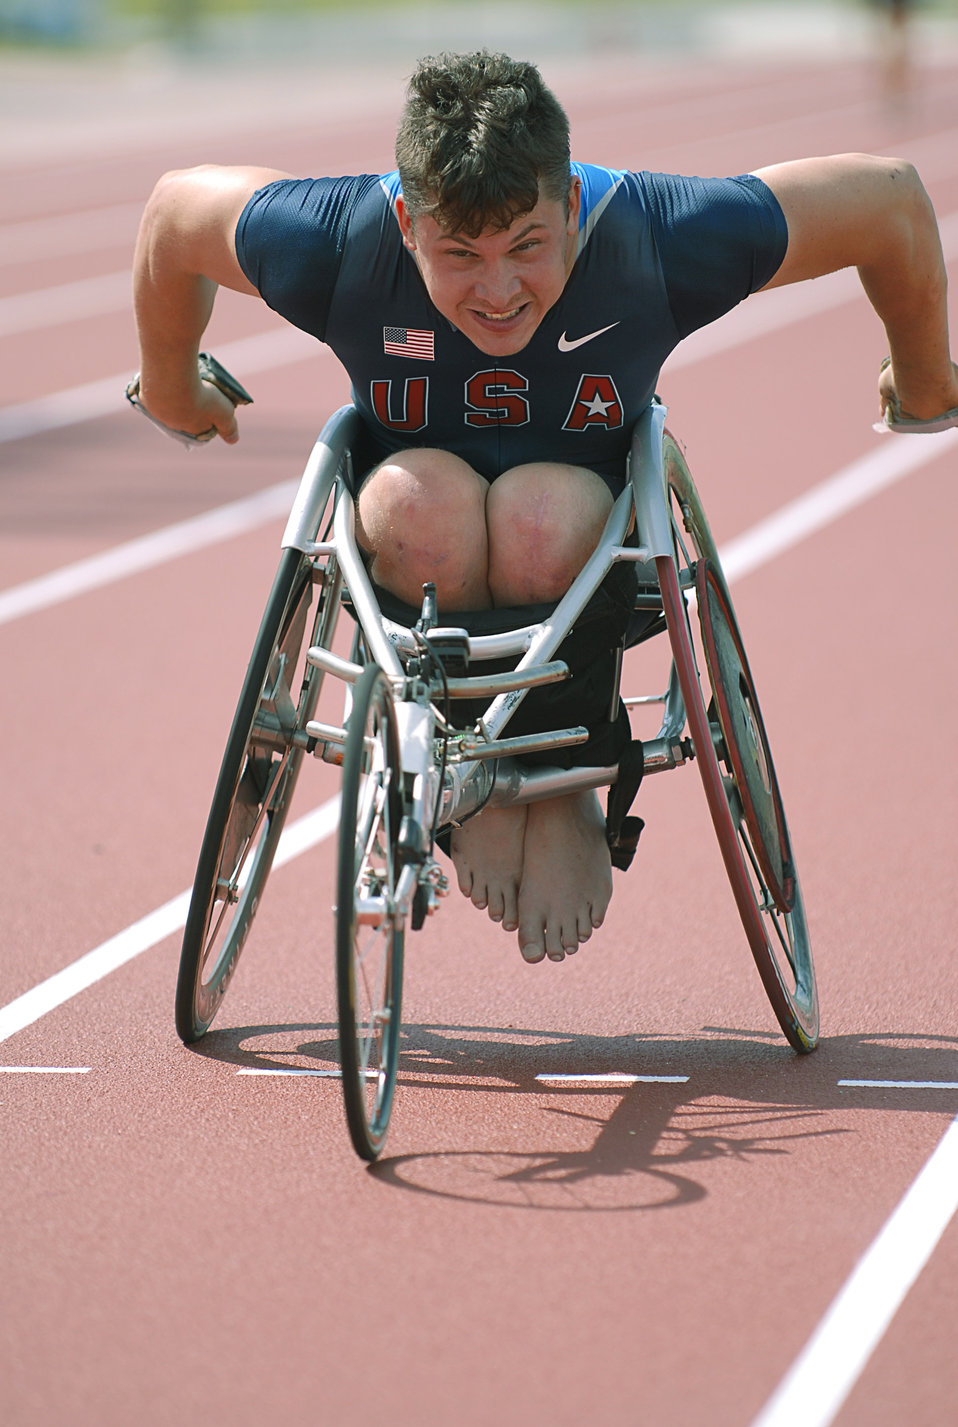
Paralympic athletes train at Kadena

Wheelchair racer Josh Roberts of Morris, Ala., trains for sprint races Aug. 26 at Ryukyu Middle School on Kadena Air Base, Japan. More than 100 athletes and support staff from the U.S. Paralympics track and field and swim teams arrived on Kadena AB Aug. 24 to live and train for the next ten days in preparation for the 2008 Paralympic Games being held in Beijing, China, Sept. 6.